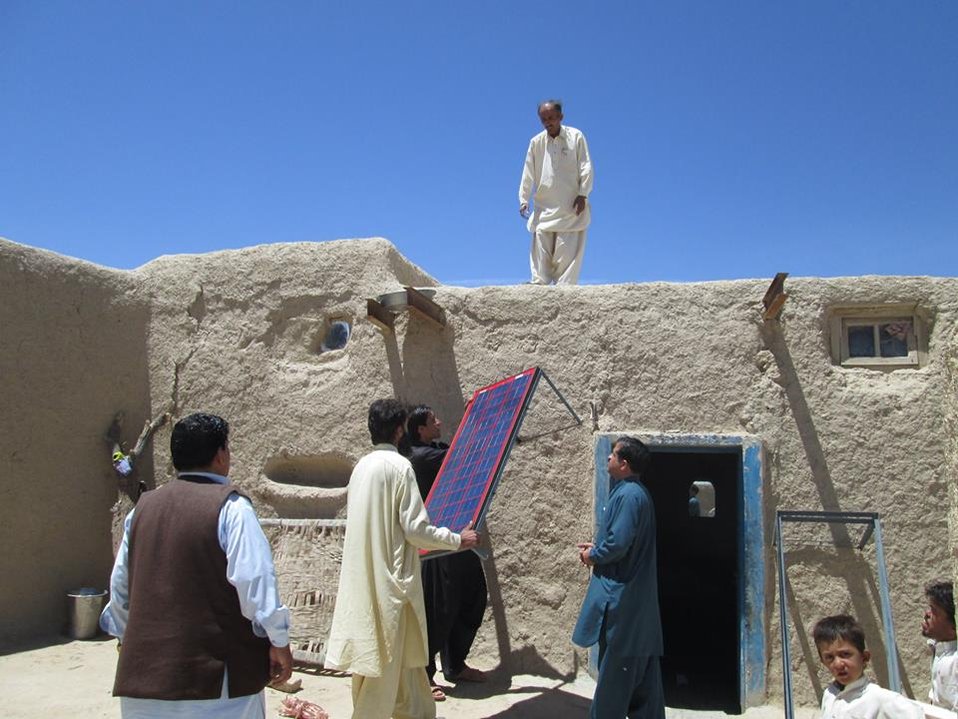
1011104 648541451871597 1445432568 n (1)